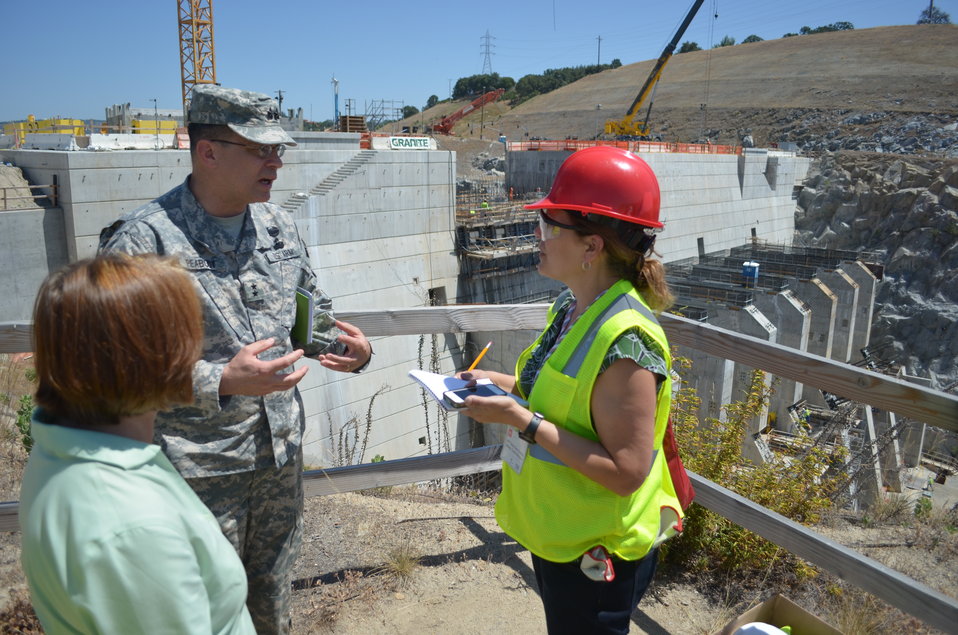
Assistant Sec. of the Army for Civil Works visits JFP

Jo-Ellen Darcy, Assistant Secretary of the Army for Civil Works (left), and Maj. Gen. John Peabody, U.S. Army Corps of Engineers Deputy Commanding General for Civil and Emergency Operations, discuss the importance of investing in America’s infrastructure with the Sacramento Bee newspaper’s Mariel Garza during a visit to the Folsom Dam auxiliary spillway project in Folsom, Calif., June 3, 2014.